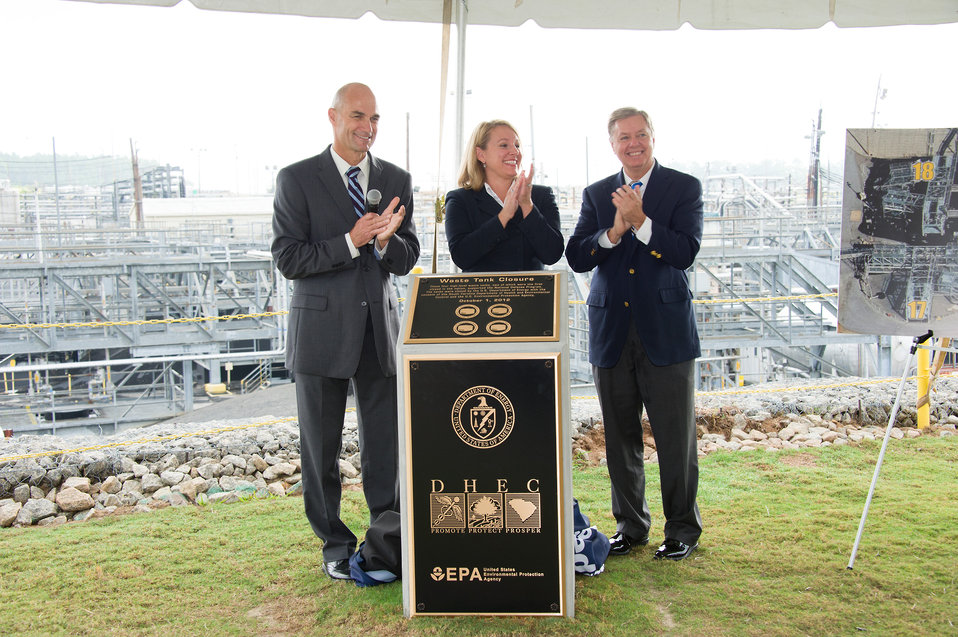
Unveiling the historical marker at F Tank Farm

Thomas P. D’Agostino, Undersecretary for Nuclear Security & Administrator, NNSA,
South Carolina Department of Health & Environmental Control, Director Catherine Templeton
Senator Lindsey Graham